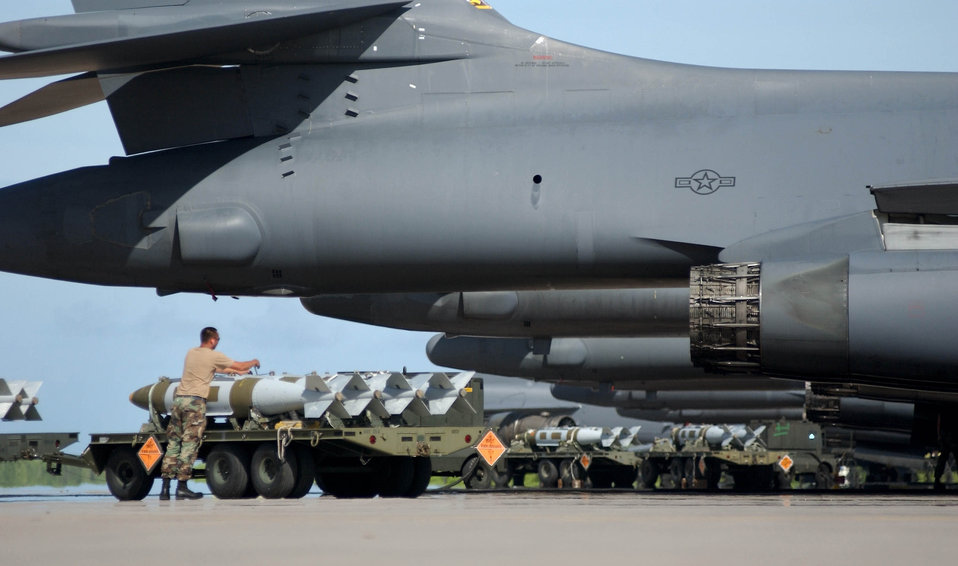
Lancer loading

OPERATION ENDURING FREEDOM -– An Air Force munitions loader from the 28th Air Expeditionary Wing, preps munitions to be loaded onto a B-1B Lancer at an operating location in support of the U.S. Central Command execution of Operation Enduring Freedom. B-1B bombers have dropped more than 3.8 million pounds of weapons and more than 60 percent of all munitions during OEF.